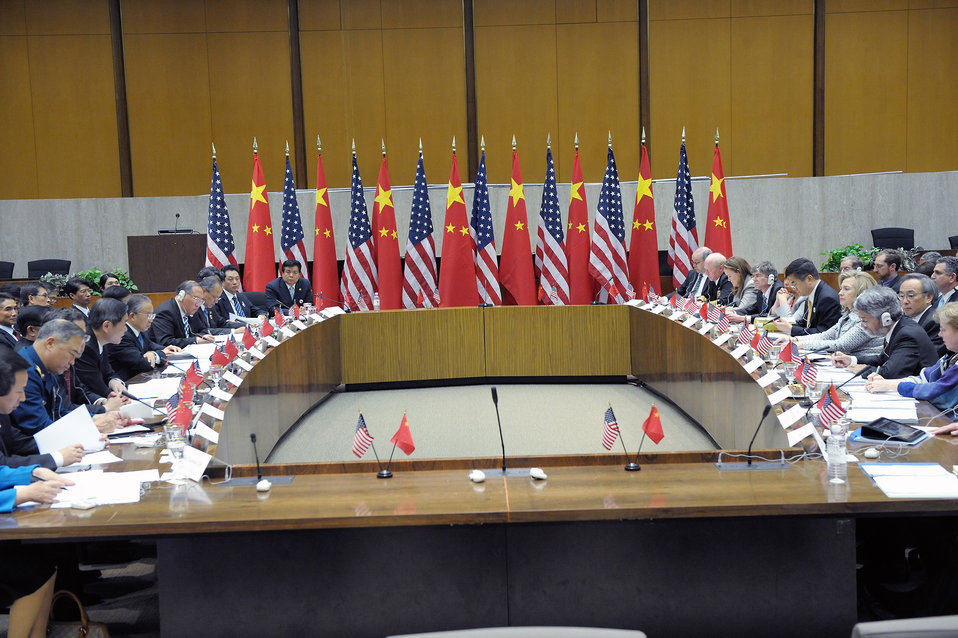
Secretary Clinton Leads the U.S.-China SandED Strategic Track Plenary Session I

U.S. Secretary of State Hillary Rodham Clinton leads the U.S.-China Strategic and Economic Dialogue Strategic Track Plenary Session I on enhancing U.S.-China cooperation with State Councilor Dai Bingguo, in the Loy Henderson Auditorium at the U.S. Department of State in Washington, D.C., on May 9, 2011.